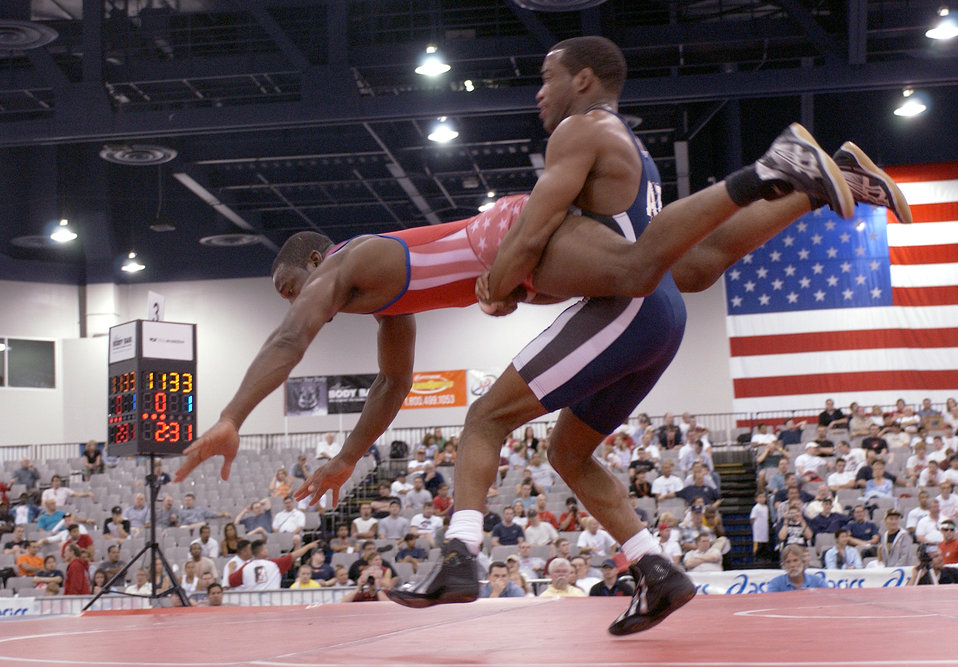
Air Force wrestling team wins national title

LAS VEGAS -- Steve Woods, 2004 armed forces champion in the 163-pound Greco-Roman wrestling division, spins an opponent during the U.S. National Wrestling Championships here April 9. Woods took the silver in his division and will represent the Air Force at the U.S. Olympic trials May 21 to 23 in Indianapolis.